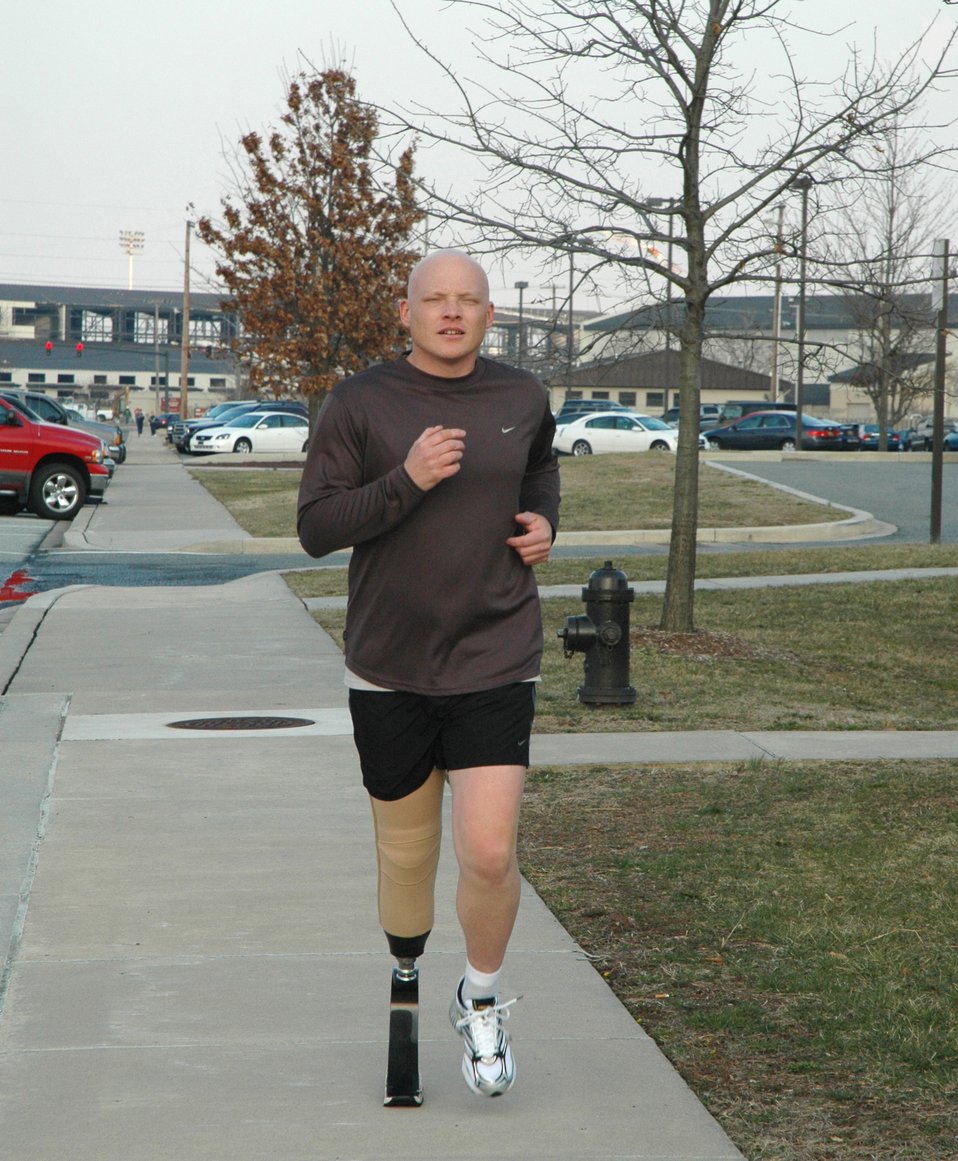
Amputee Airman overcomes cancer

Tech. Sgt. Matthew Profitt runs wearing a flexible prosthesis, a C-Sprint, which absorbs impact. In 2003, while activated at Dover Air Force Base, Del., supporting the war on terrorism, the reservist's leg was amputated when he was diagnosed with epithelioid sarcoma, a malignant soft tissue tumor. He is a 512th Aircraft Maintenance Squadron guidance and control section technician.